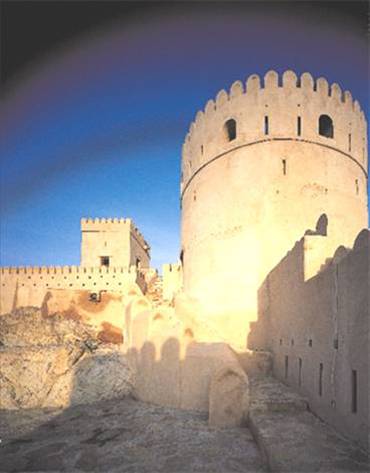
فارسی: قلعه نزوى ـ عمان ـ نزوى